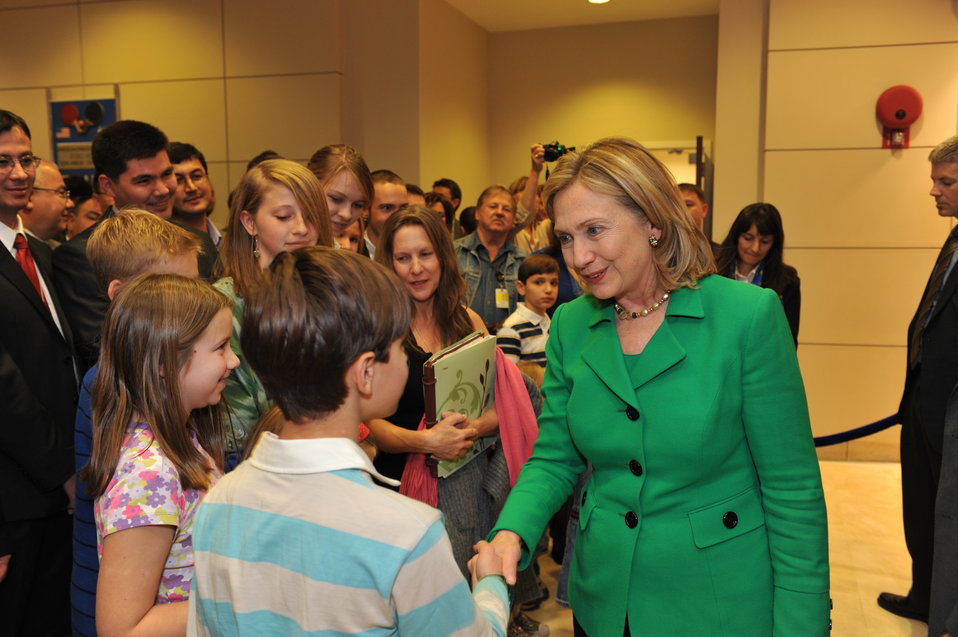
Secretary Clinton Shakes Hands With Children

U.S. Secretary of State Hillary Rodham Clinton shakes hands with children of the U.S. Embassy Tashkent community in Tashkent, Uzbekistan, on December 2, 2010.